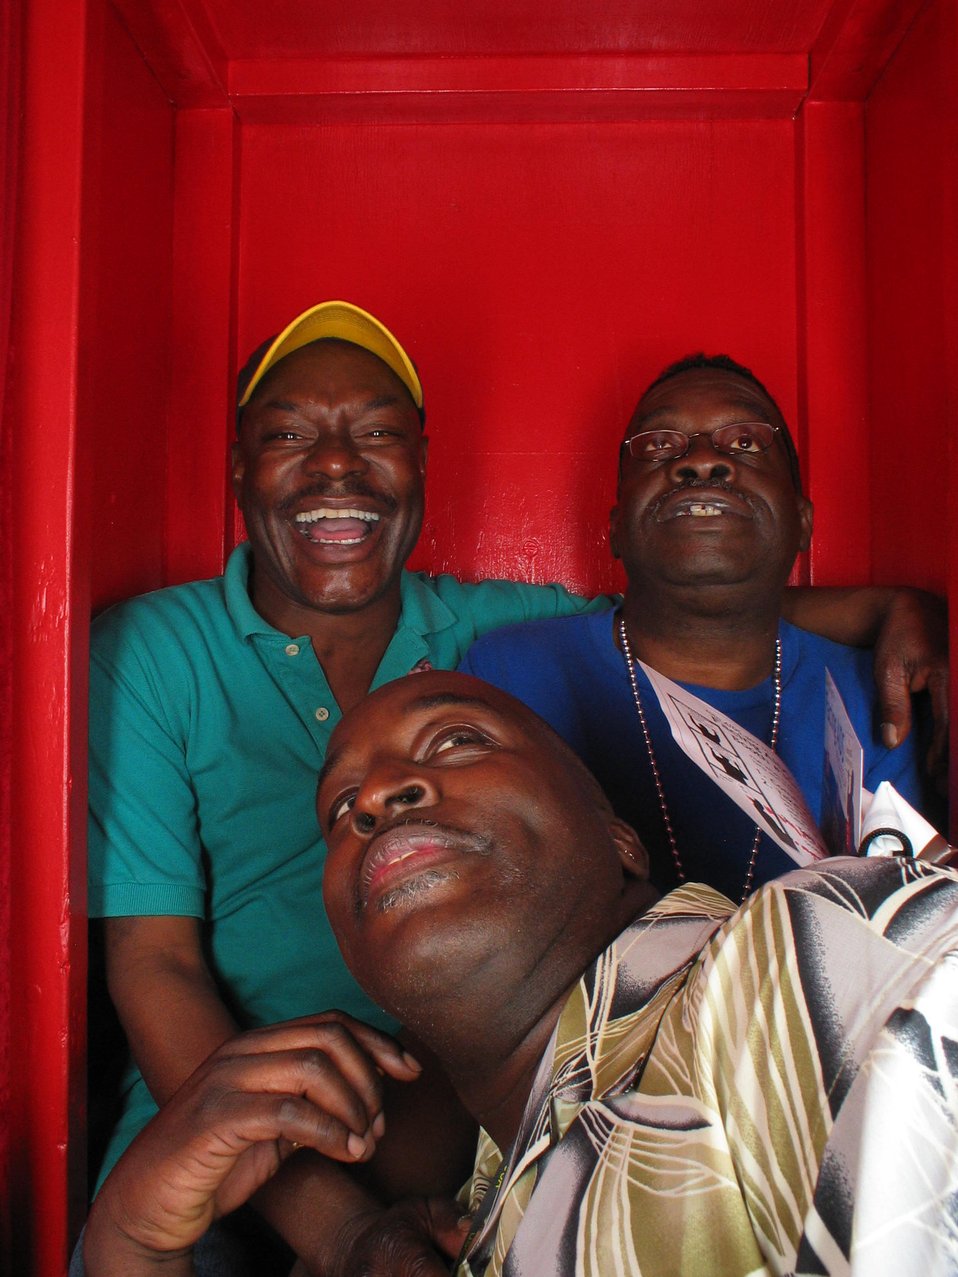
Facing AIDS